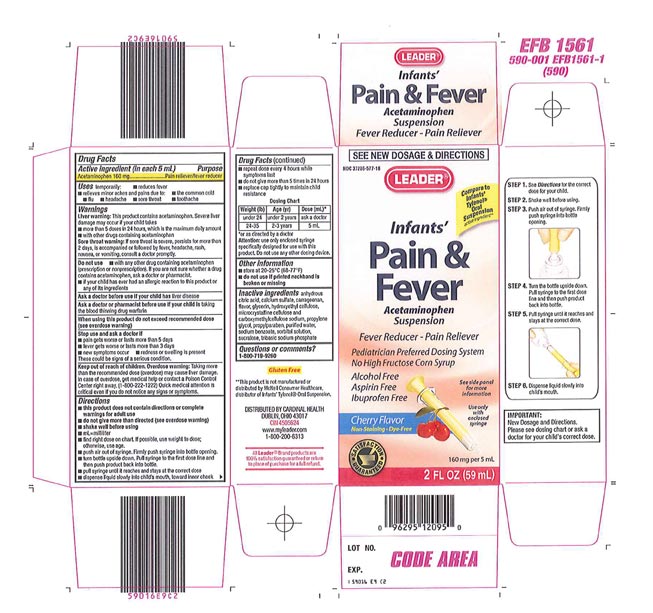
Recalled - Acetaminophen infant suspension liquid

November 1, 2013 – Product Recall – Perrigo Initiates Nationwide Voluntary Product Recall of Acetaminophen Infant Suspension Liquid, 160 Mg/5 Ml, Due to a Potential Defect with the Co-packaged Oral Syringe.